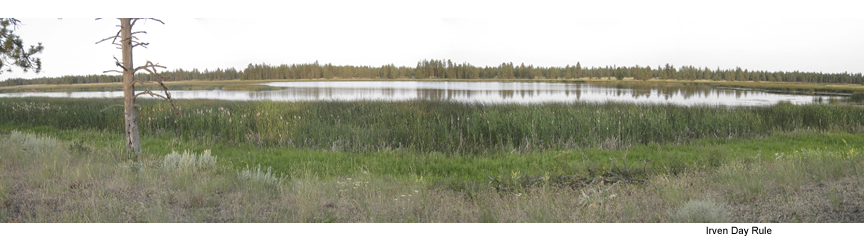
Turnbull NWR